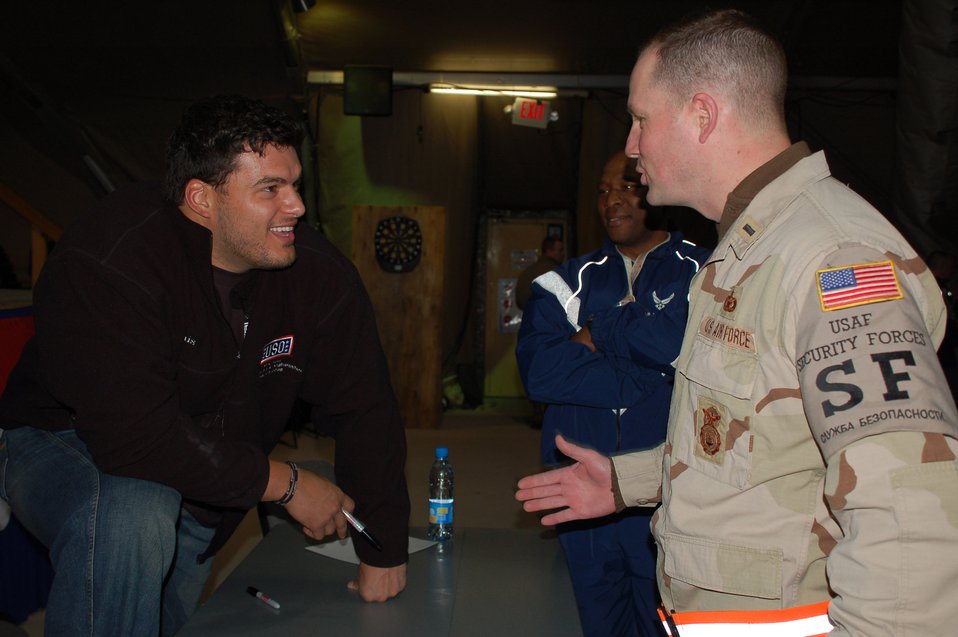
NFL players kick off USO tour in Kyrgyzstan

San Diego Chargers Luis Castillo chats with 1st Lt. Steven Falusi March 4 at the recreation center on Manas Air Base, Kyrgyzstan. Castillo, Chicago Bears Tommie Harris, Carolina Panthers Mike Rucker and Sports Illustrated writer Peter King took part in the United Service Organizations National Football League tour to visit servicemembers supporting the war. Lieutenant Falusi, assigned to the 376th Expeditionary Security Forces Squadron, is a Connecticut Air National Guard member.